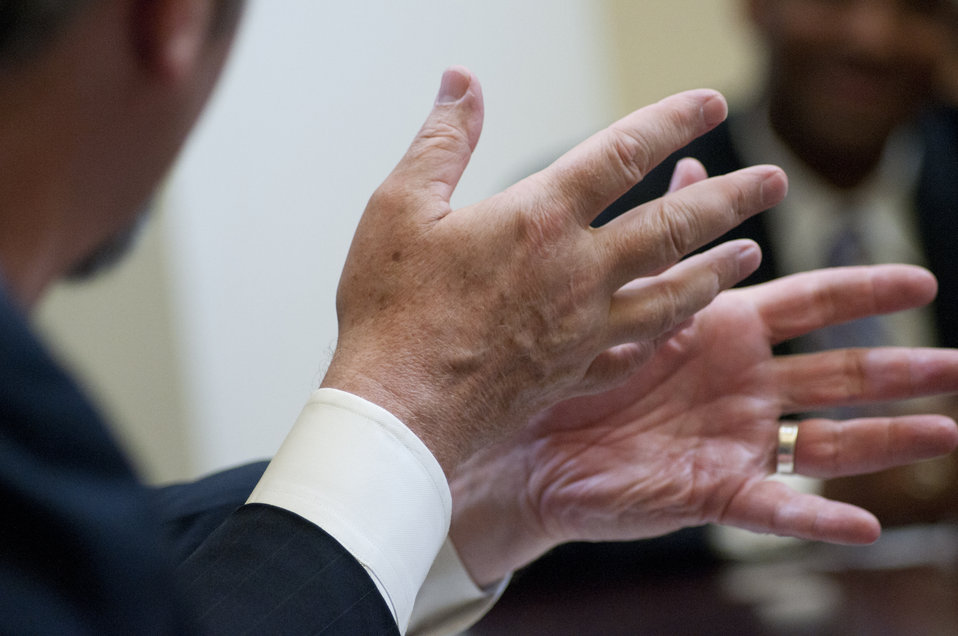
On Wednesday, Jul. 6, 2011, Agriculture Secretary Tom Vilsack attended a meeting at the White House in Washington, DC, with President Barack Obama, the President's Domestic Policy Adviser Melody Barnes and rural communities leaders from across the country for the White House Rural Champions of Change event. The purpose of this meeting is to strengthen rural communities and promote economic growth. Prior to coming here, they were posed with a question about, what should/should not the government be doing to strengthen rural communities and promote economic growth.